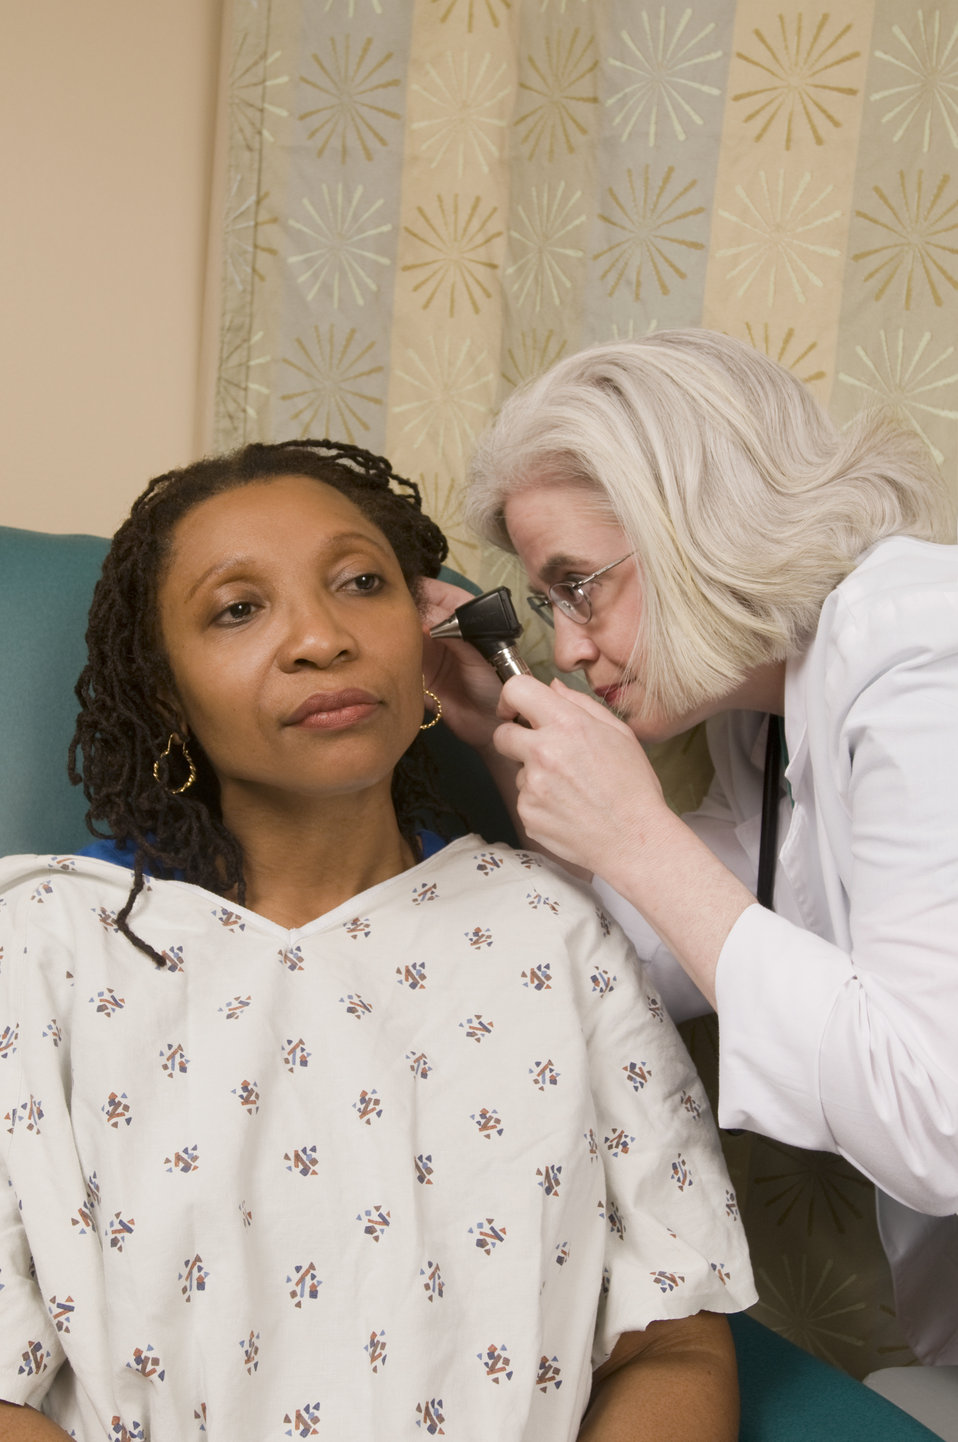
This image depicts a female physician conducting an examination of a female patient's left ear, using an otoscope, which she'd inserted into the left ear canal.